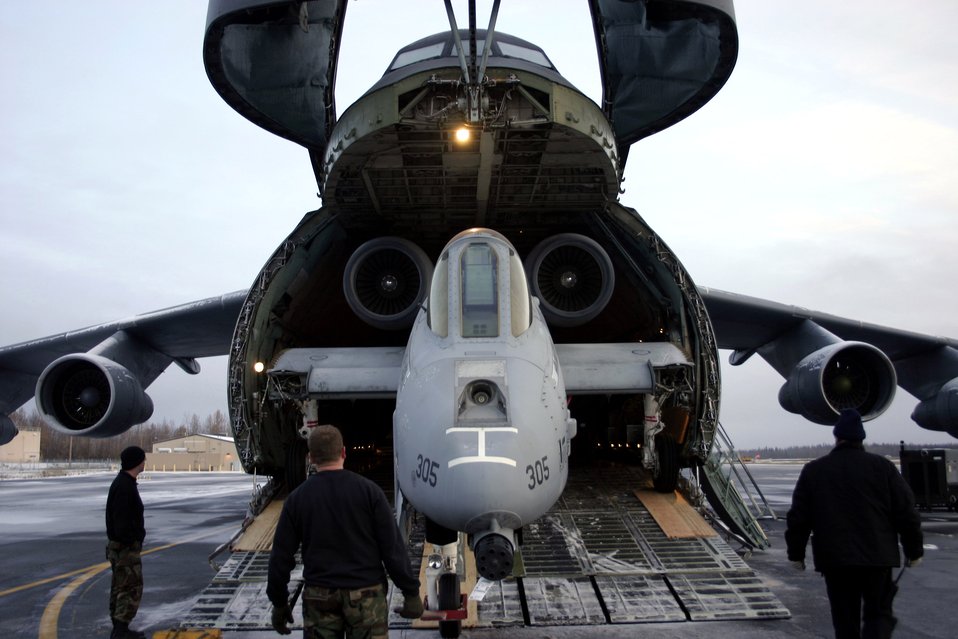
Eielson's last A-10 nestles into new home

An A-10 Thunderbolt II is winched back into the C-5 Galaxy for transport to the Robbins Air Force Base, Ga., Museum of Aviation Flight and Technology Center Oct. 6 at Eielson Air Force Base, Alaska. The aircraft was disassembled into six different sections, which took a team of eight members three days to accomplish.